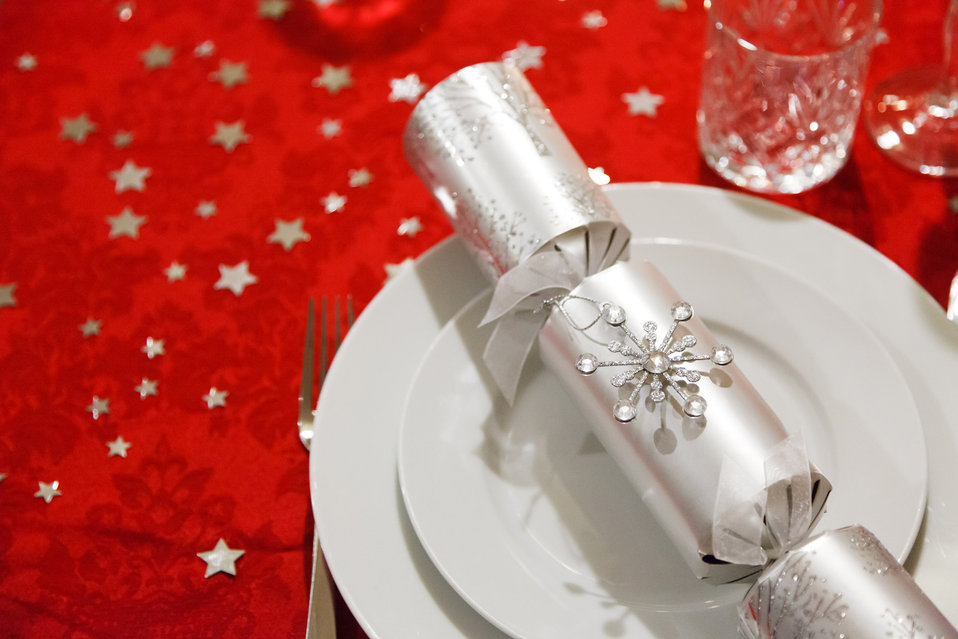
Christmas dining setting

A festive red and silver christmas table setting.